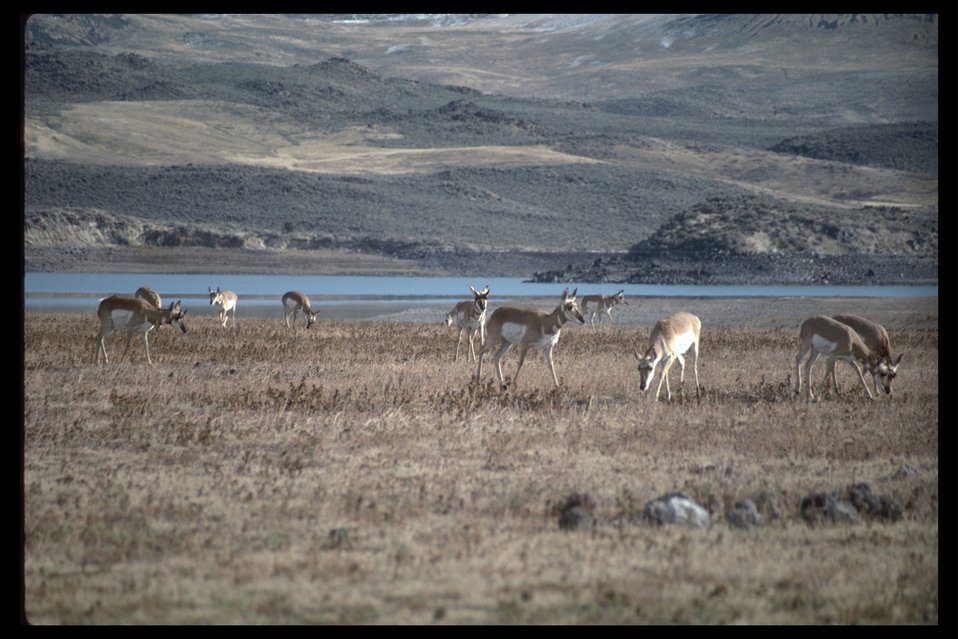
Large herd of Prong Horn Antelope at Warm Springs Reservoir.